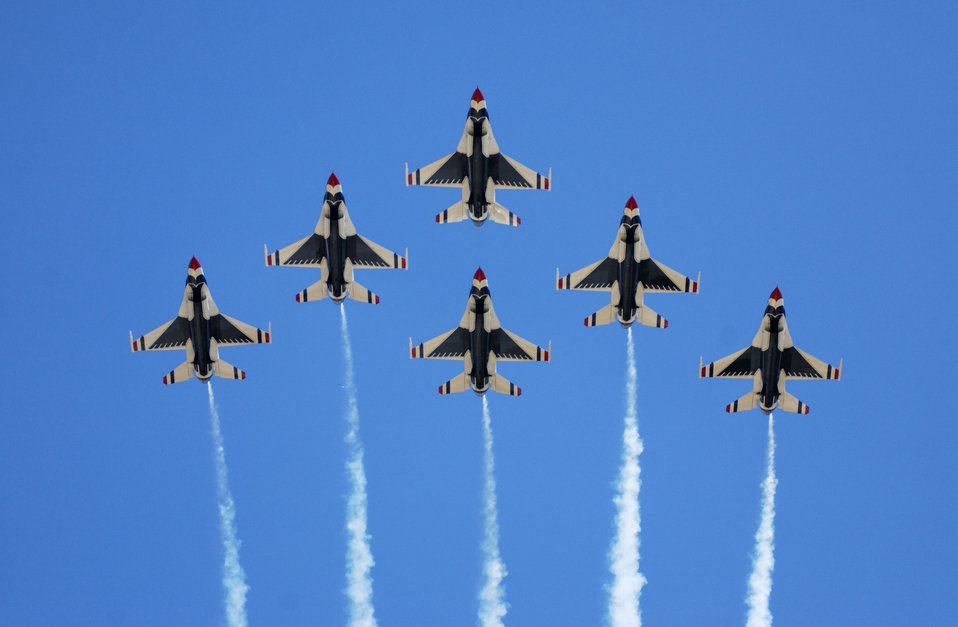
6-ship formation

SIOUX FALLS S.D. -- The U.S. Air Force Thunderbirds perform a 6-ship formation fly over during a 2003 airshow. The team performs precision aerial maneuvers to exhibit the capabilities of modern high-performance aircraft to audiences throughout the world.